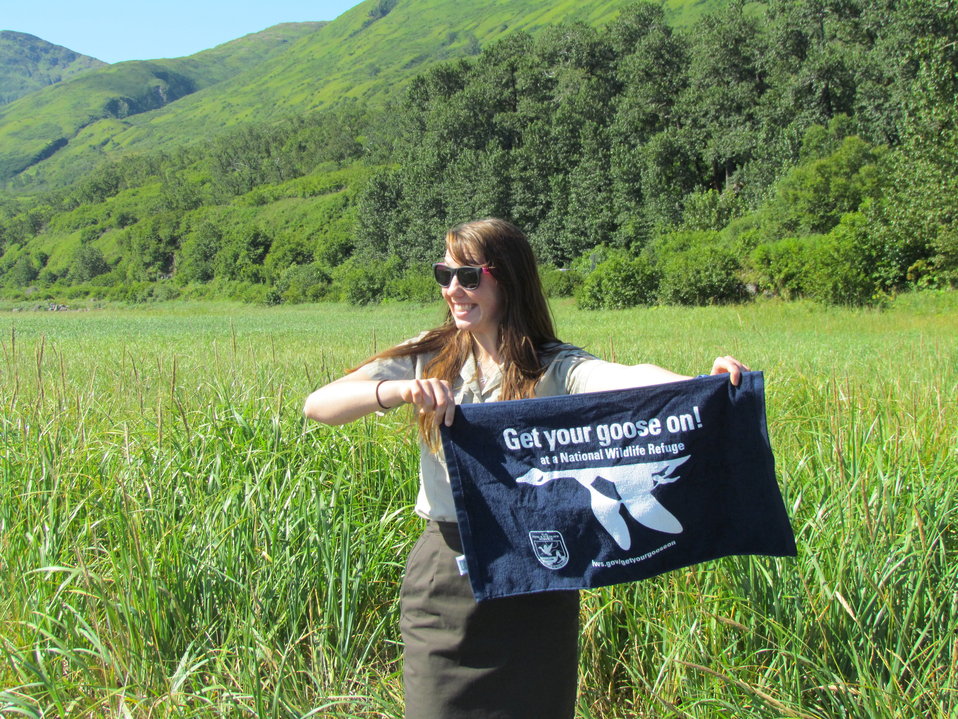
Get Your Goose On! - Alaska Style

Seasonal Park Ranger, Kari Eschenbacher

Credit: Shelly Lawson / USFWS

The Kodiak National Wildlife Refuge is a United States National Wildlife Refuge in the Kodiak Archipelago in southwestern Alaska, United States.

The Kodiak National Wildlife Refuge includes the southwestern two-thirds of Kodiak Island, Uganik Island, the Red Peaks area of Afognak Island and all of Ban Island in the archipelago. It encompasses 1,990,418 acres (8,054.94 km2).[2] The refuge is administered from offices in Kodiak.

The refuge contains seven major rivers and about 100 streams. It is a spawning ground for all six species of Pacific Ocean salmon, trout and several other fish species, as well as a nesting ground for 250 species of bird, many of which feed on salmon. The refuge has only six native species of mammals: Kodiak brown bear, red fox, river otter, ermine, little brown bat and tundra vole. The non-native mammals Sitka deer, mountain goat, Roosevelt elk, snowshoe hare and beaver were introduced to the archipelago between the 1920s and 1950s and are now hunted and trapped.

The climate of the refuge is that of southern Alaska, mild and rainy. Many areas in the refuge are densely forested with Sitka Spruce at lower elevations. There are grasslands in drier areas and at higher elevations. The refuge contains several small glaciers.